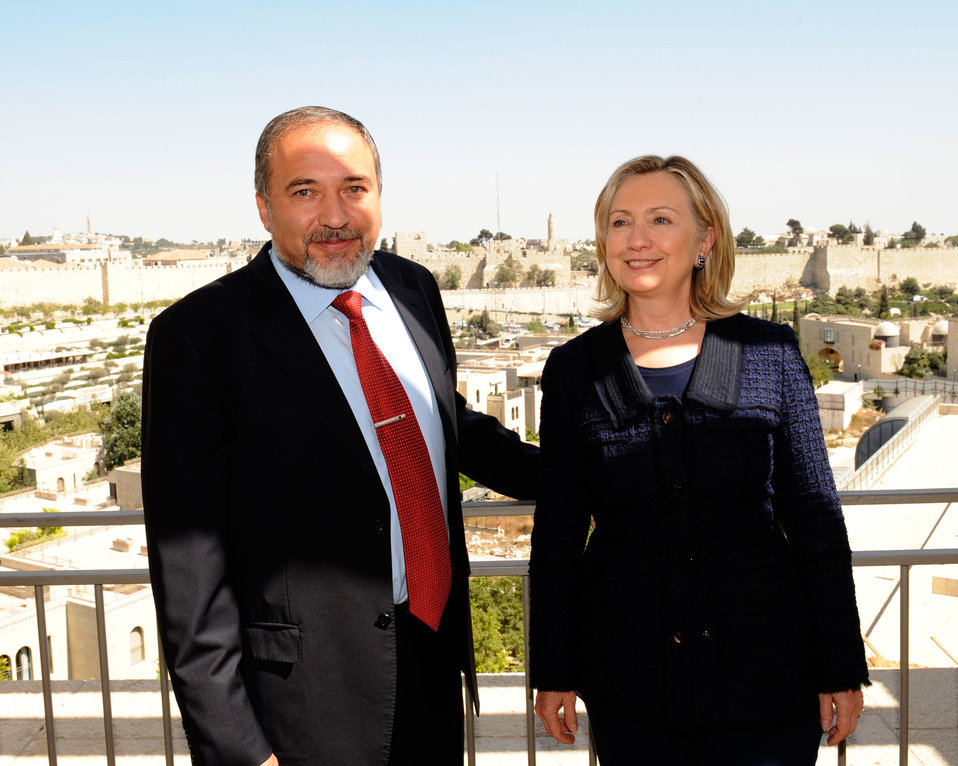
Secretary Clinton Meets With Israeli Foreign Affairs MInister Lieberman

U.S. Secretary of State Hillary Rodham Clinton poses for a photo with Israeli Foreign Affairs Minister Avigdor Lieberman at the David Citadel Hotel in Jerusalem on September 15, 2010.